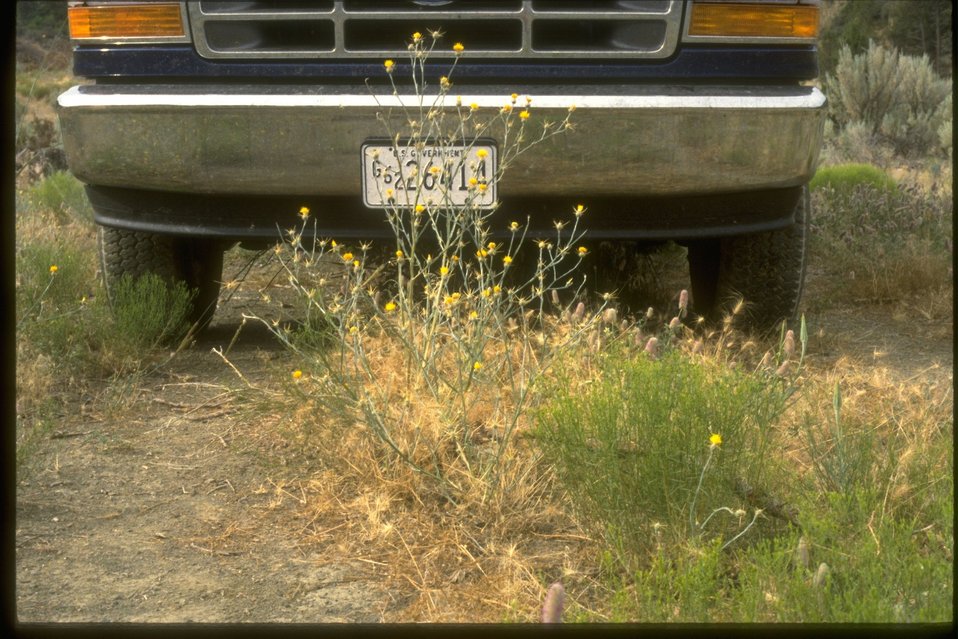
Diffuse knapweed just about go under and perhaps attached to the vehicle in the Lower John Day River area.